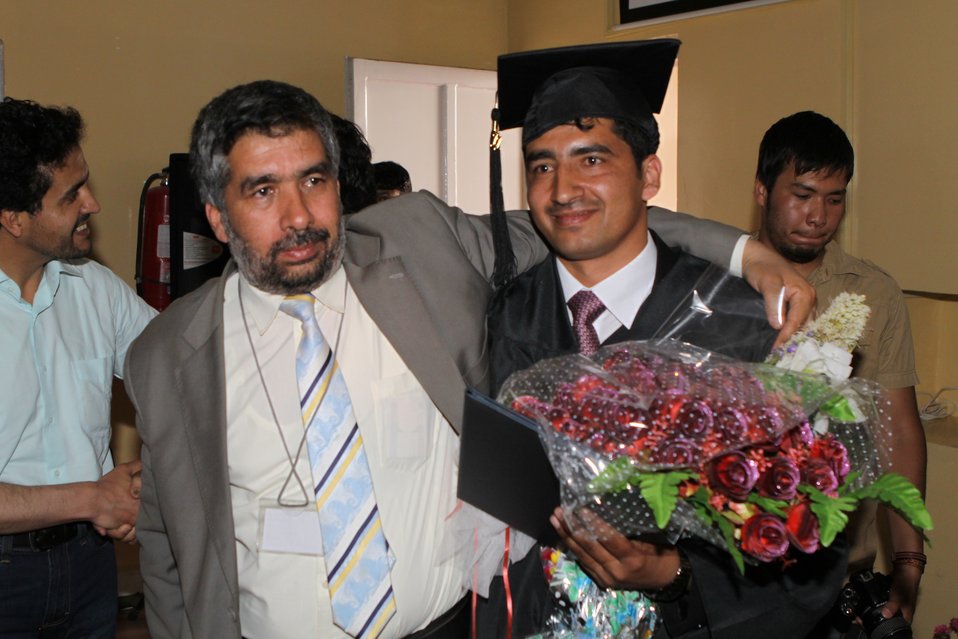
100526 AUAF Graduation 311